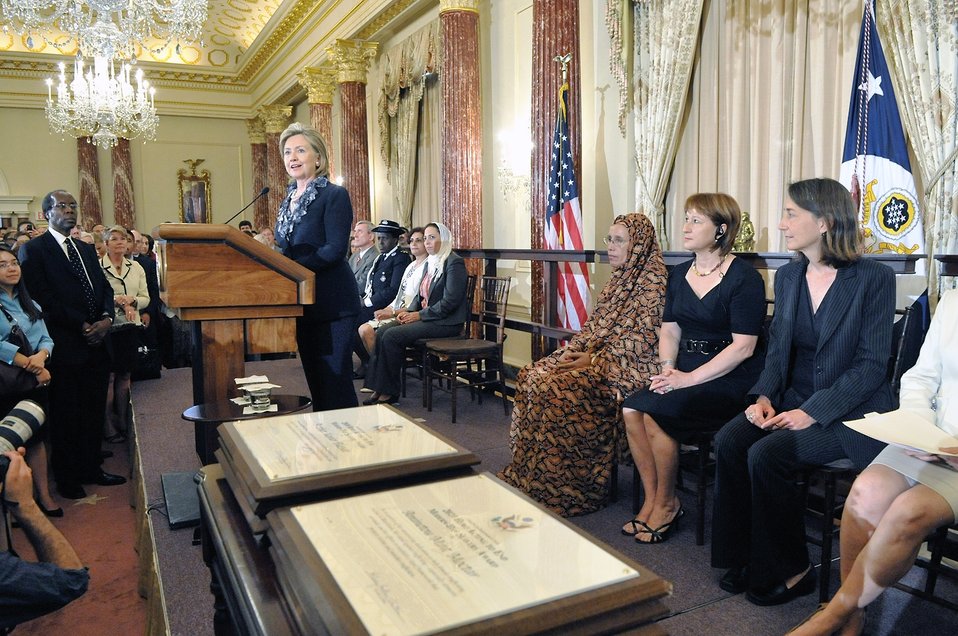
Secretary Clinton Announces Release of 2010 Trafficking in Persons Report

U.S. Secretary of State Hillary Rodham Clinton announces the release of the 2010 Trafficking in Persons Report at the U.S. Department of State in Washington, D.C., on June 14, 2010.